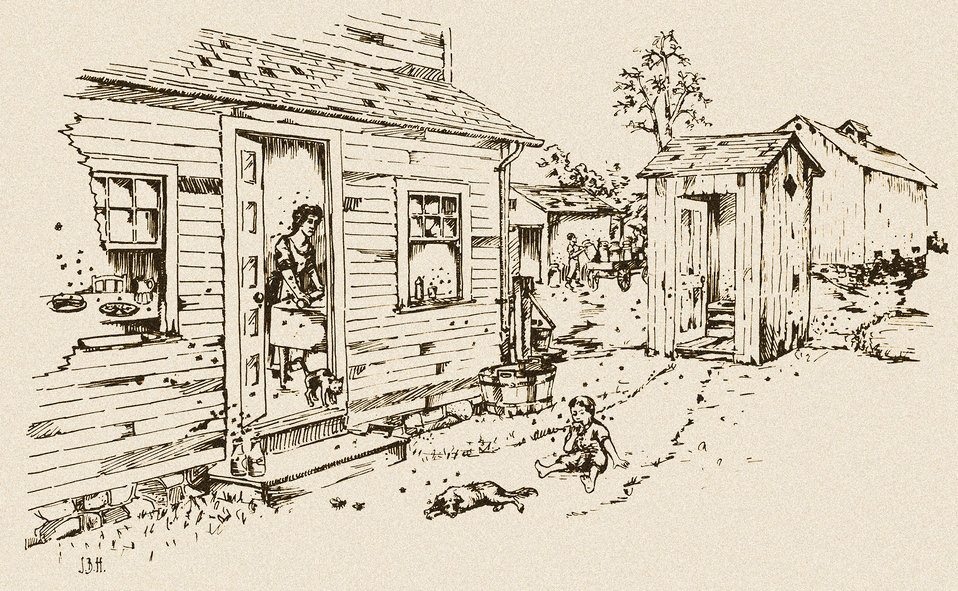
This historic diagram, which had been digitally enhanced and colorized, depicted an unsanitary privy that was attracting flies, which could carry, and transmit infective pathogens to nearby human beings. Other examples of poor sanitation included the lack of screens on the house windows. Note the presence of flies evident throughout the home's food preparation areas; a dirt pathway leading from the house to the privy, which increased the chances of dirt entering the living spaces; an open privy door allowing flies to enter the privy, while in close proximity to the outdoor potable water spigot; the barefoot child increased his susceptibility to disease such as hookworm; the milk containers from the wagon in the background were leaking in the direction of the house and water supply.